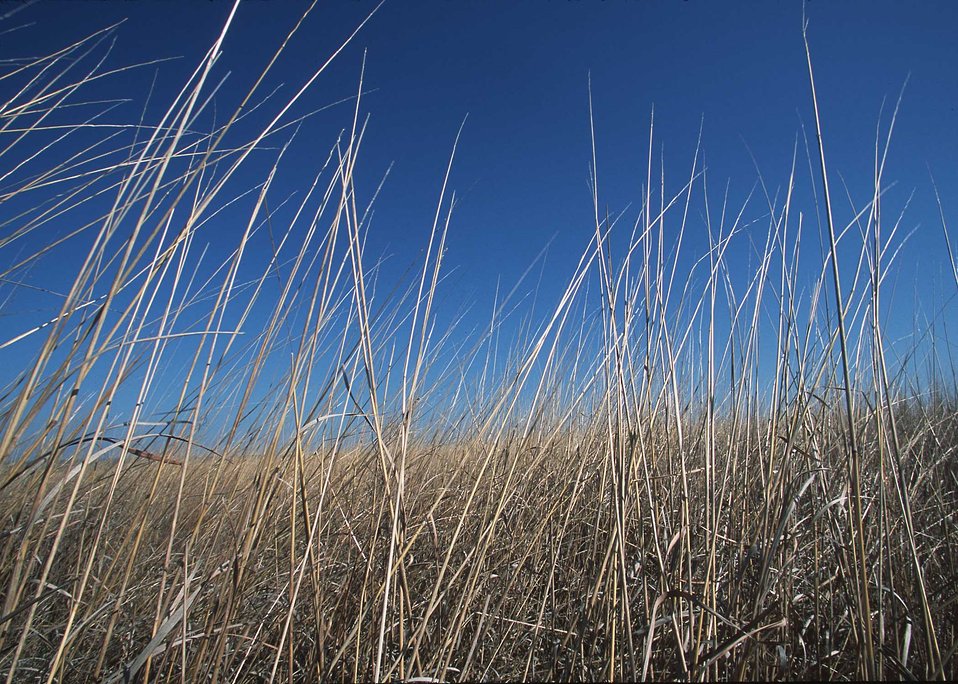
Prairie species seeded under the Conservation Reserve Program. Kansas.